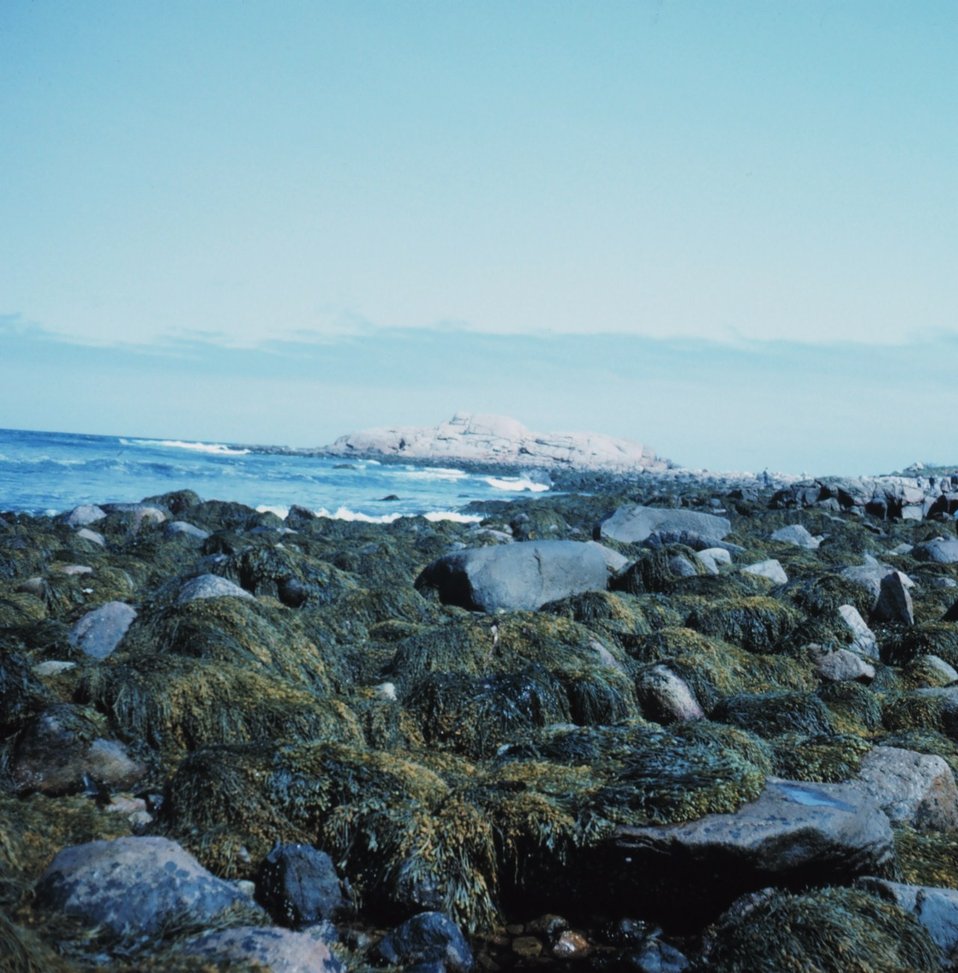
Rocks along the Massachusetts coast covered with the brown algae Ascophyllum nodosum, or knotted wrack.